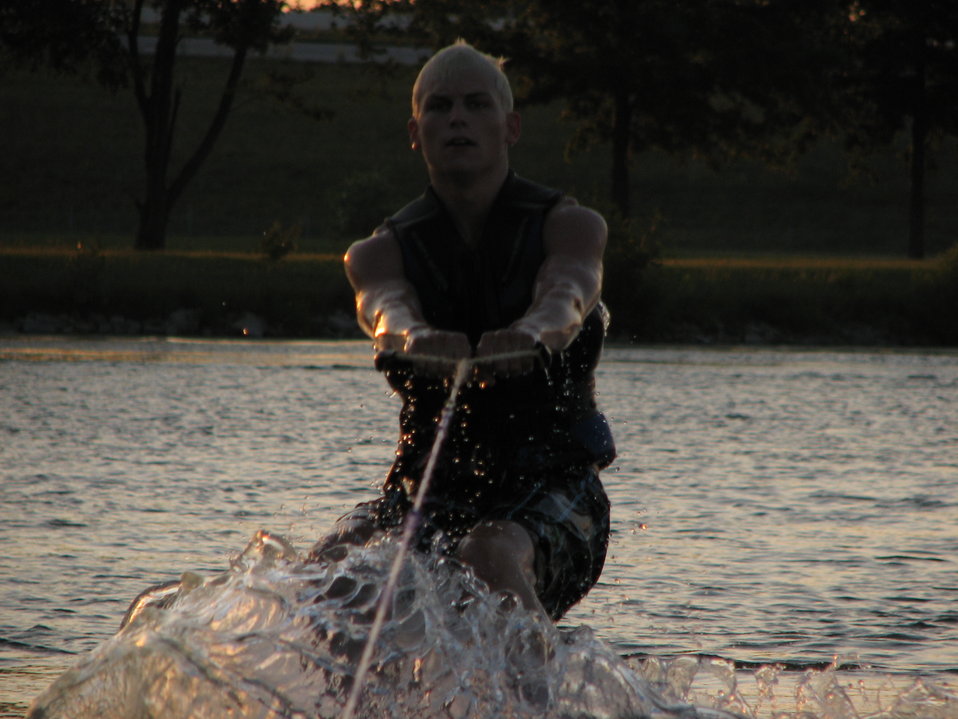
Mitchell Bieberich performs a Deepwater Start Picture taken by: Mark Messmann